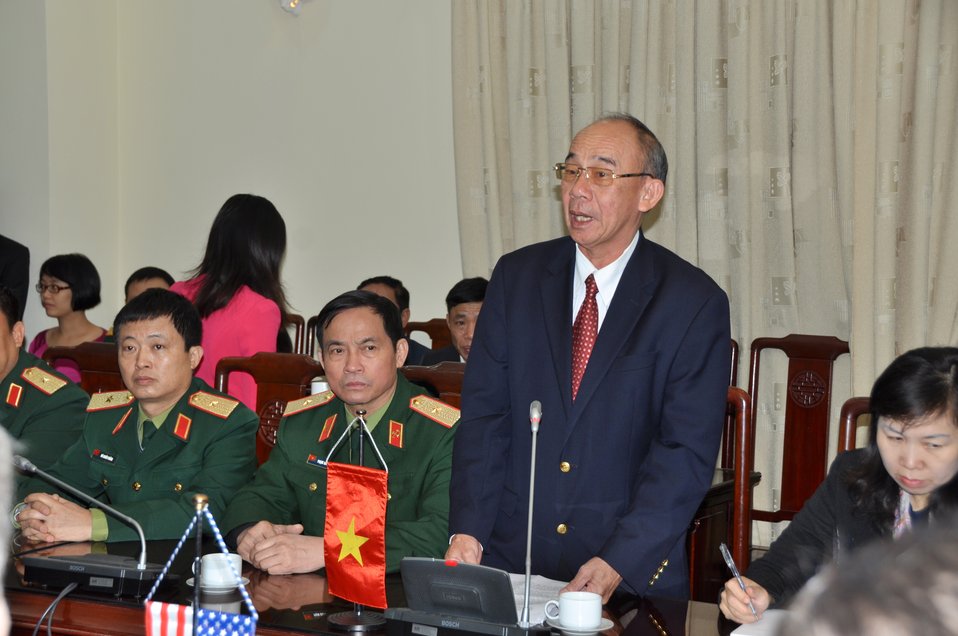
Mr. Bui Hong Linh, Vietnam’s Vice-Minister of the Ministry of Labor, Invalids and Social Affairs (MOLISA) and Committee 504 Vice-Chairman, speaks at the MoU signing ceremony.

Hanoi, December 16, 2013.